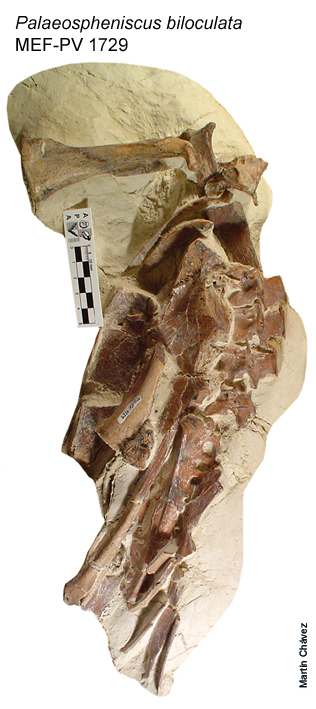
Specimen MEF-PV 1729 of Palaeospheniscus biloculata